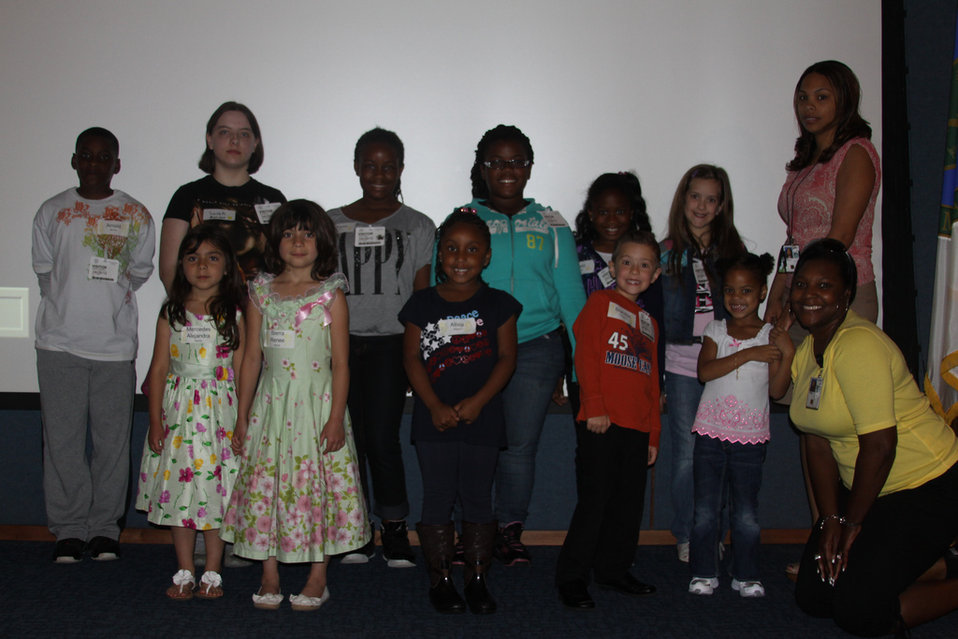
Nacole's Group